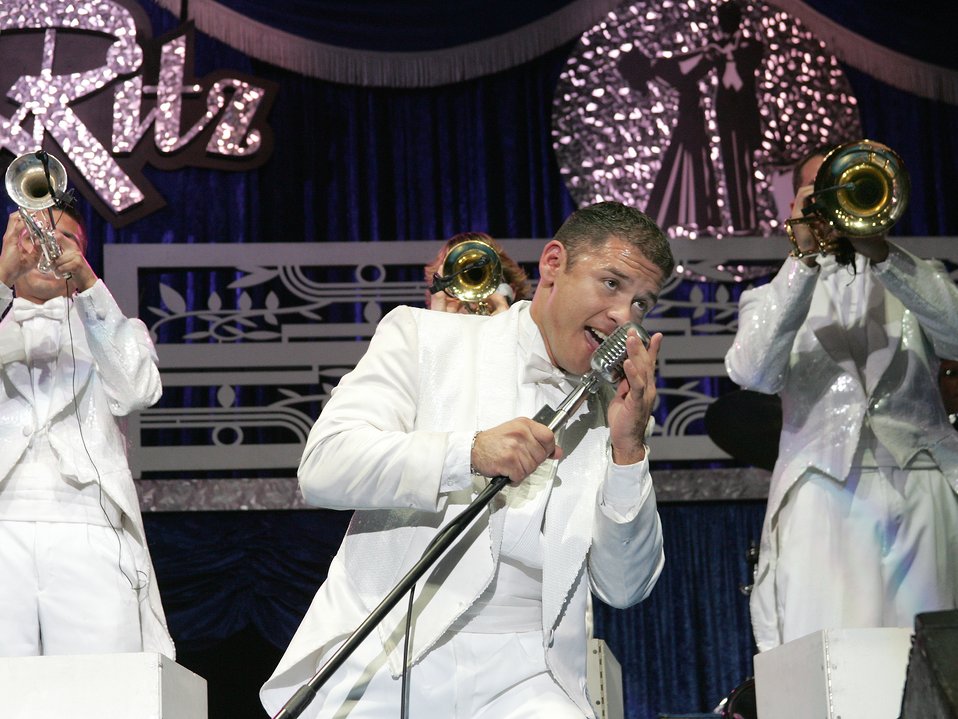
Tops in Blue

Staff Sgt. Eddie Bernal performs a song during one of the 2005 Tops in Blue final shows March 15 to 17, 2006, at the Bob Hope Theater at Lackland Air Force Base, Texas. Sergeant Bernal is a videographer at Brooks City-Base, Texas.